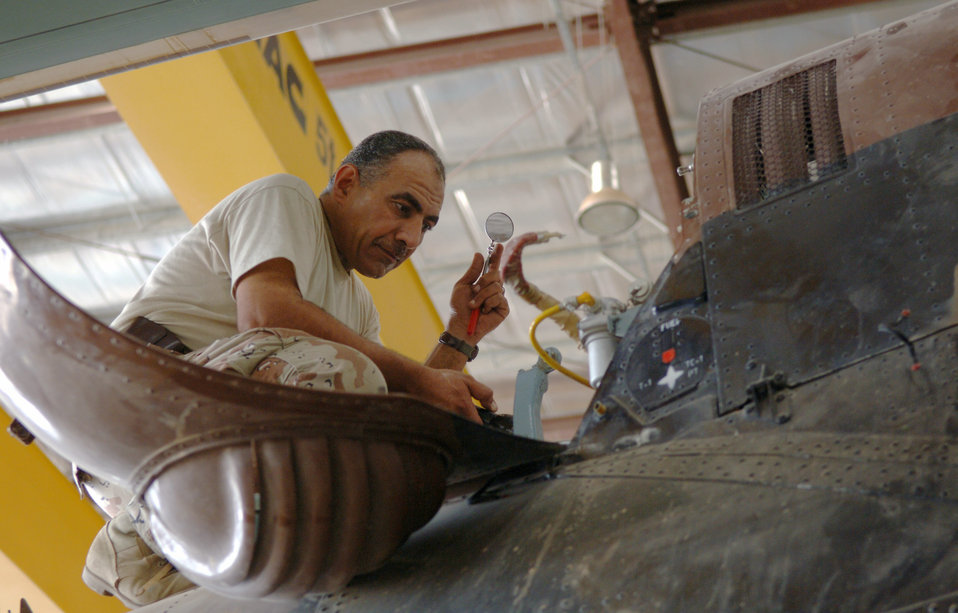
Iraqi airmen keep helicopter fleet flying

Iraqi air force Lt. Col. Auday Yasseu Yousif inspects an Mi-17 Hip's mechanical systems Sept. 11 at Taji Air Base, Iraq. The helicopter made a hard landing and struck its tail skid against the ground during a recent training mission, requiring a close inspection of its tail section. Colonel Yousiff is chief engineer of second-line maintenance for the Iraqi air force technical wing.